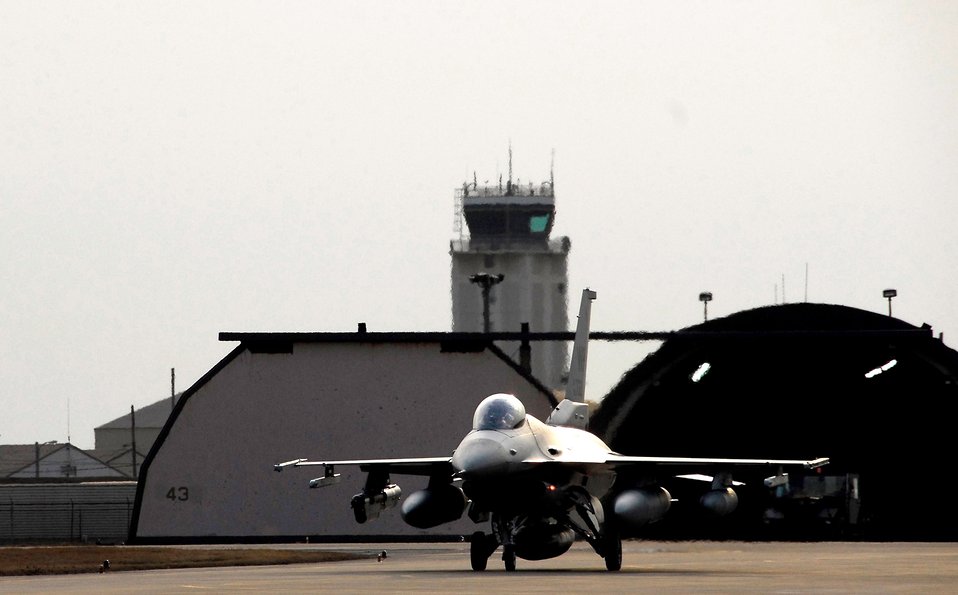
Kunsan, Eielson swap F-16s

An F-16 Fighting Falcon taxies to a hangar at Kunsan Air Base, South Korea, after a Jan. 18 flight from Eielson Air Base, Alaska. The 80th Fighter Squadron will be receiving 18 Common Configuration Implementation Program Block 40 jets from the Alaskan-based unit and Eielson AFB will in-turn receive the 80th FS Block 30 jets for an aggressor squadron.